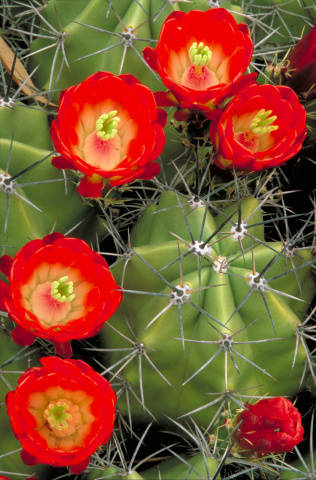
claret cup cactus